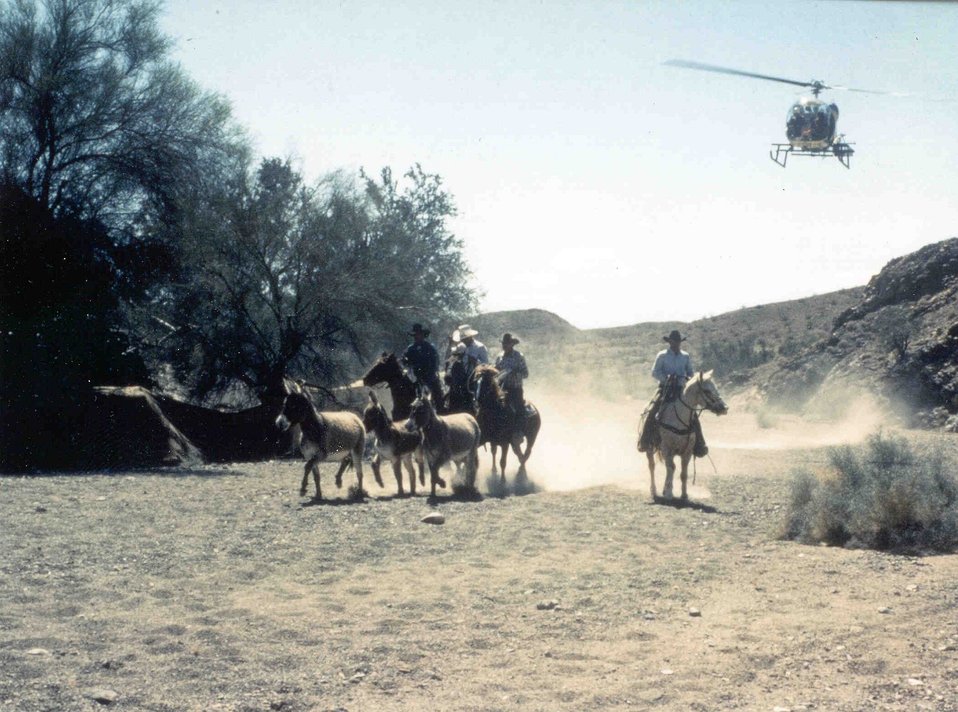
Wild burros being rounded up with the help of a helicopter and wranglers.